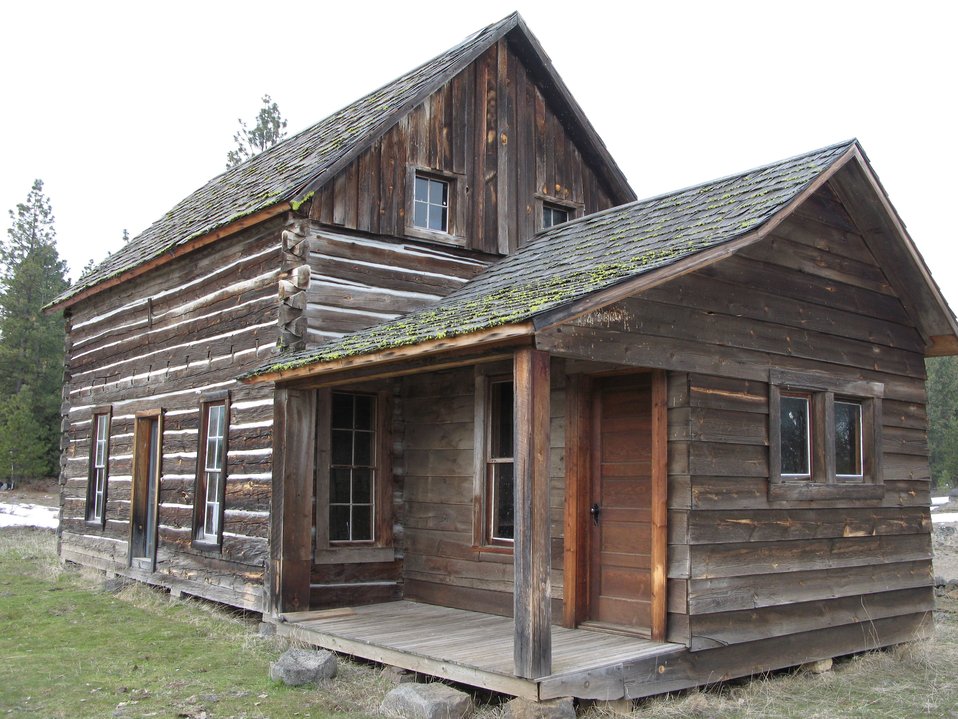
Whitcomb-Cole Cabin

A contemporary photo of the homestead located on what is now Conboy Lake National Wildlife Refuge in Washington.